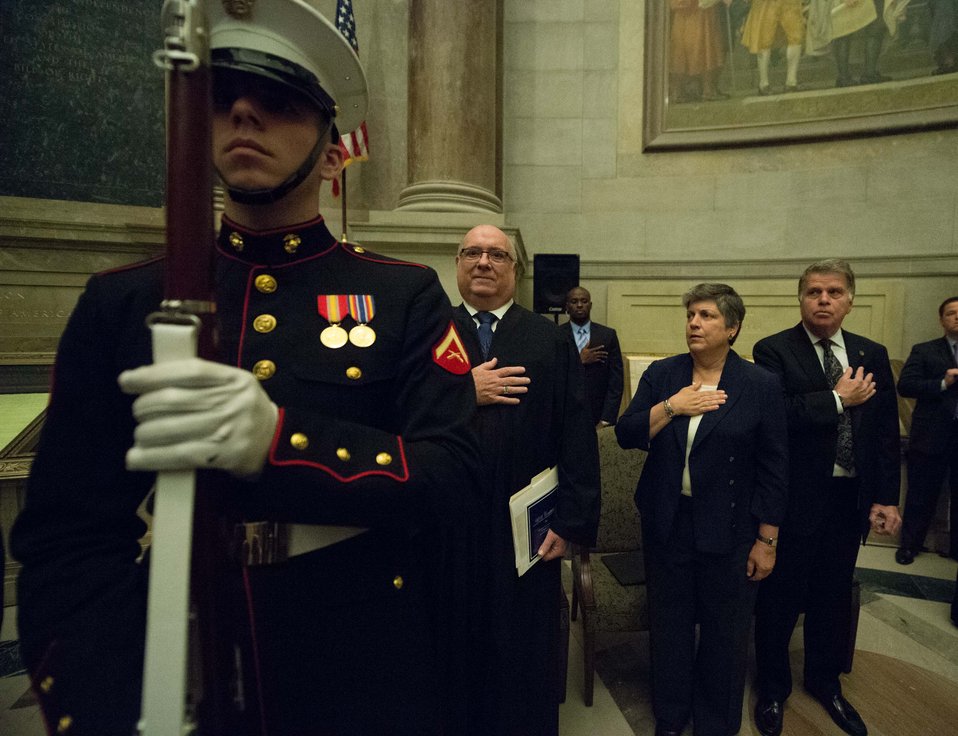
Constitution Day Naturalization Ceremony

The Color Guard passes by the Honorable Royce Lamberth, Secretary of Homeland Security Janet Napolitano, and Archivist of the United States David S. Ferriero.